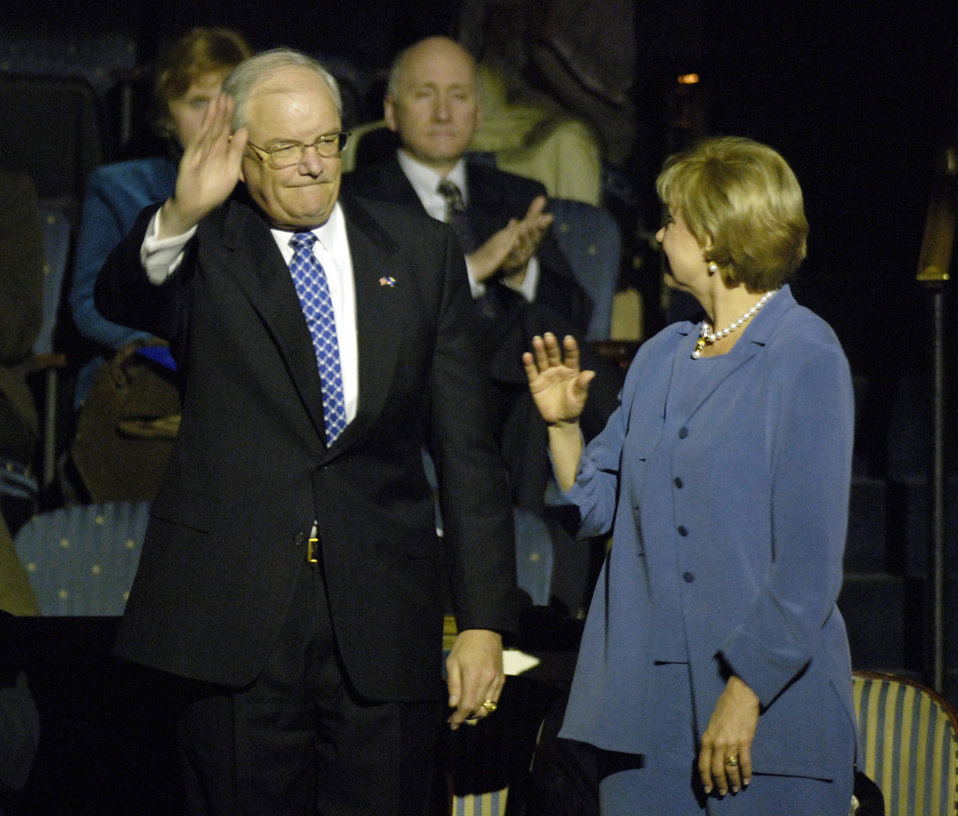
USAF Band guest artist series

Secretary of the Air Force Michael W. Wynne is introduced at the start of the US Air Force Band's final concert of this season's guest artist series, Sunday, Mar. 5, 2006, in Washington, D.C. The Air Force band capped off its 40th anniversary of hosting the series by performing with country music star Mark Wills, along with the Air Force Reserve Pipe Band from Robins Air Force Base, Ga.